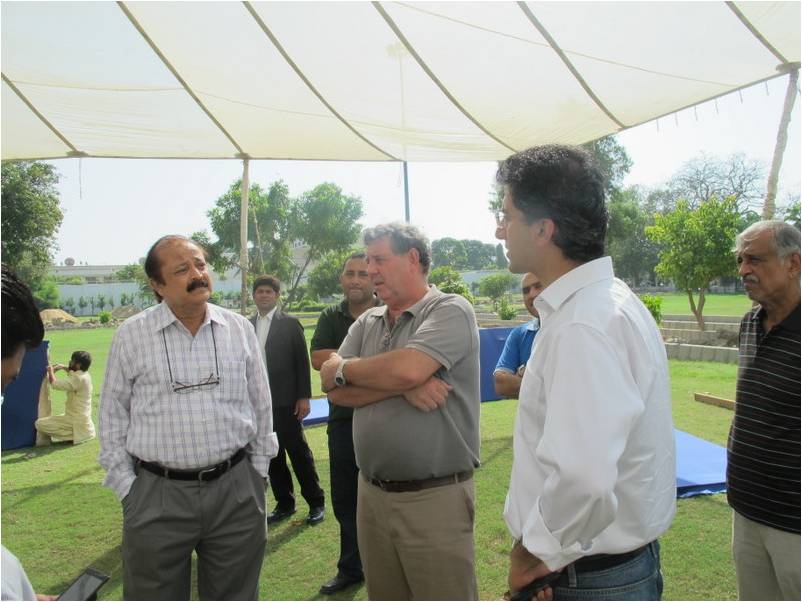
Mr Misbah Farid, MD KWandSB, John Pullinger, PDP Field Ops, and Omar Malik, PDP Field Ops, discussing the arrangements.